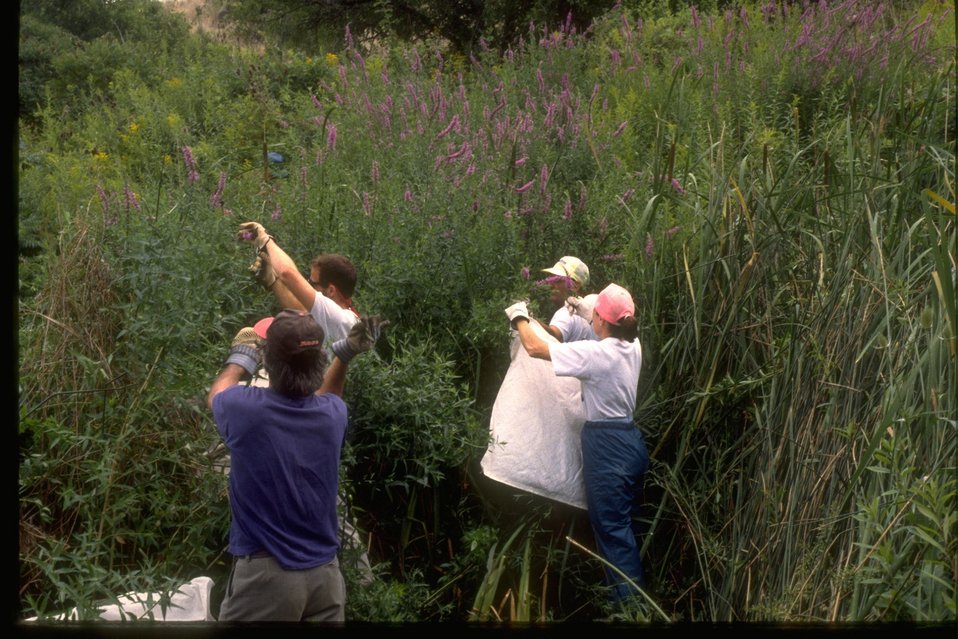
Sierra Club members clipping seedheads from puple loosestrife at Pittsburg Landing in Hells Canyon.